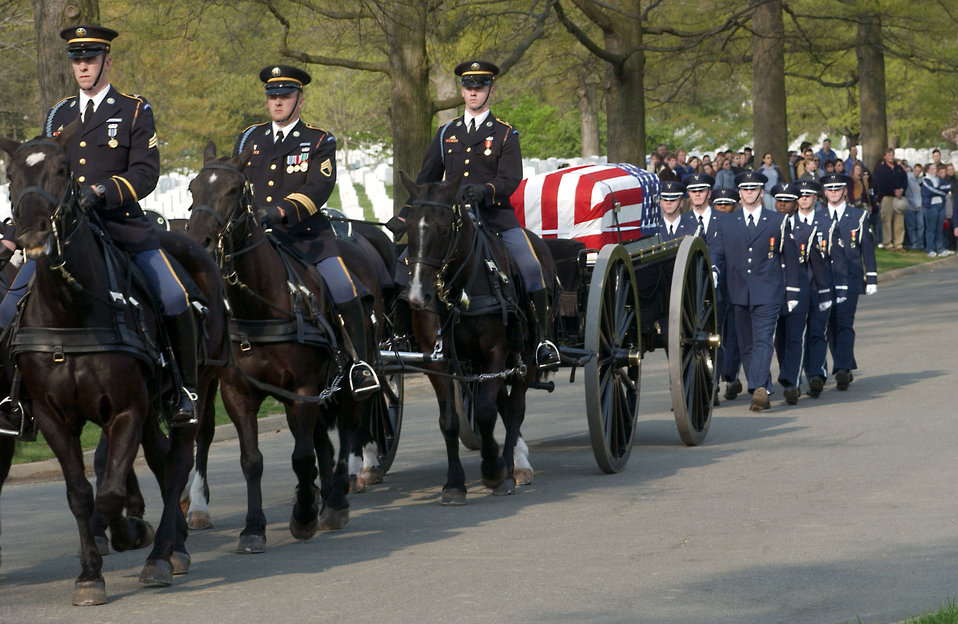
Maj. Gregory L. Stone Funeral

ARLINGTON, Va. (AFPN) -- The U.S. Air Force Honor Guard marches behind the caisson carrying Maj. Gregory L. Stone at Arlington National Cemetery on April 17. Stone was the first Air Force casualty of Operation Iraqi Freedom. He was assigned to the Idaho Air National Guard's 124th Wing.